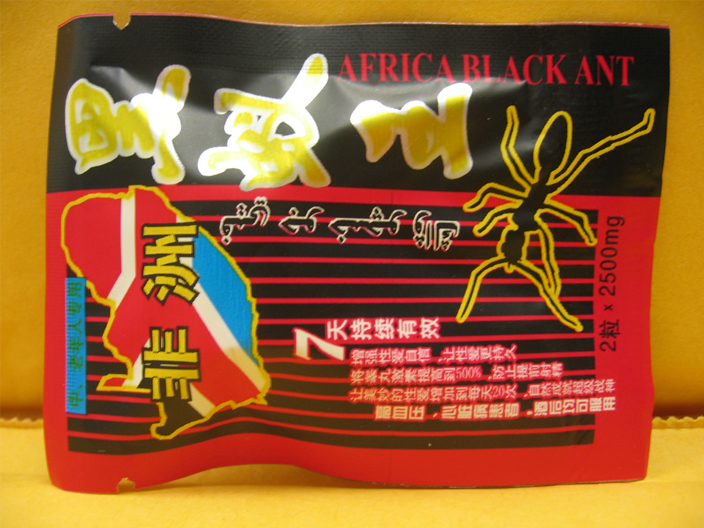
African Black Ant

April 5, 2012 - The FDA is advising consumers not to purchase or use 'African Black Ant,' a product promoted and sold for sexual enhancement. The product was found to contain undeclared sildenafil and tadalafil. For more information, go to www.fda.gov/drugs/resourcesforyou/consumers/buyingusingme...

And read this Consumer Update: Beware of Fraudulent ‘Dietary Supplements’